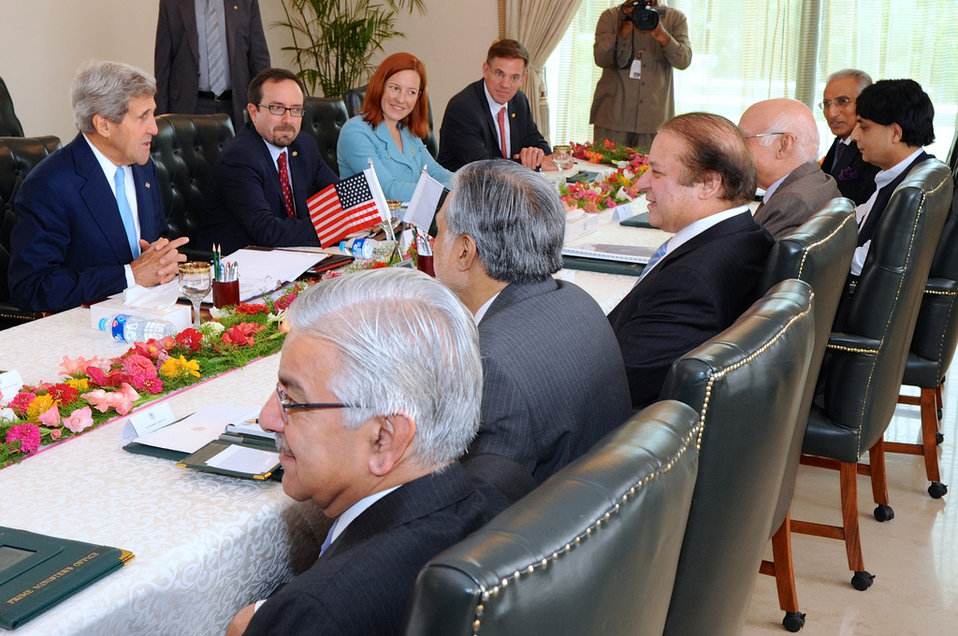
Secretary Kerry Meets With Pakistani Prime Minister Sharif

U.S Secretary of State John Kerry and Pakistani Prime Minister Nawaz Sharif chat before a meeting with their respective staffs in Islamabad, Pakistan, on August 1, 2013.